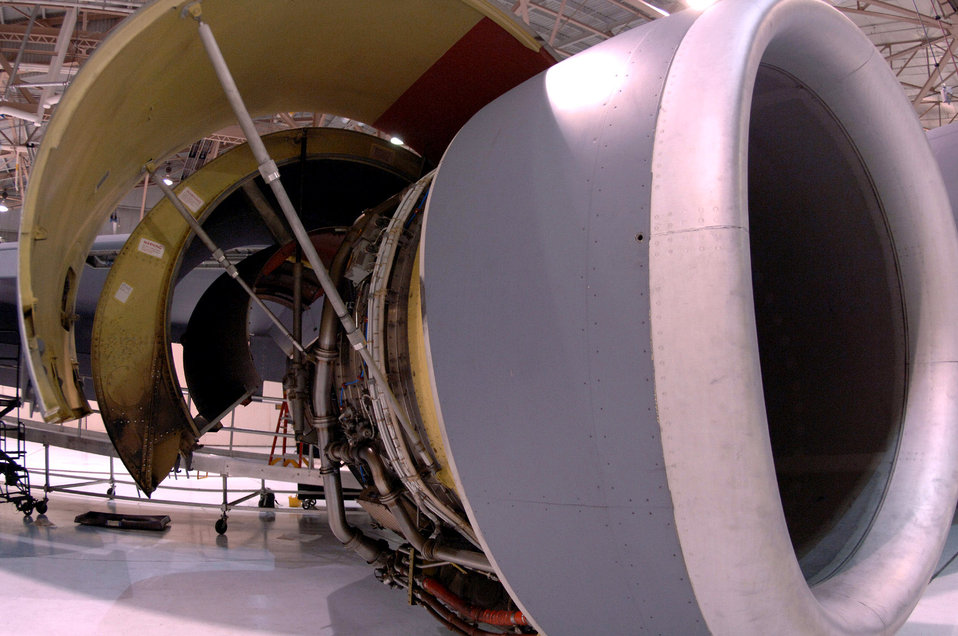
More than routine maintenance

One of four KC-135 Stratotanker engines sits with its cowlings open and ready for inspection during a periodic inspection at Grand Forks Air Force Base, N.D. The engines are just one of many systems examined during these inspections. More than eight career fields and 50 Airmen work together to ensure the almost 50-year-old backbone of the Air Force's global reach ability is ready for service throughout the world.